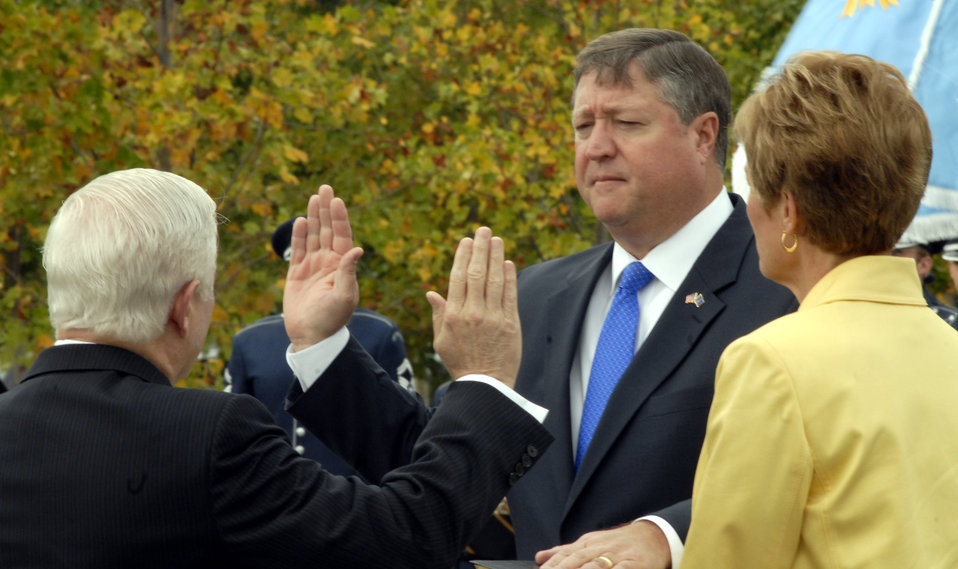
Donley officially sworn in as Secretary of the Air Force

Secretary of Defense Robert Gates (left) swears in Michael Donley as the 22nd secretary of the Air Force at a ceremony Oct. 17 at the Air Force Memorial in Arlington, Va., as his wife, Gail Donley, looks on.